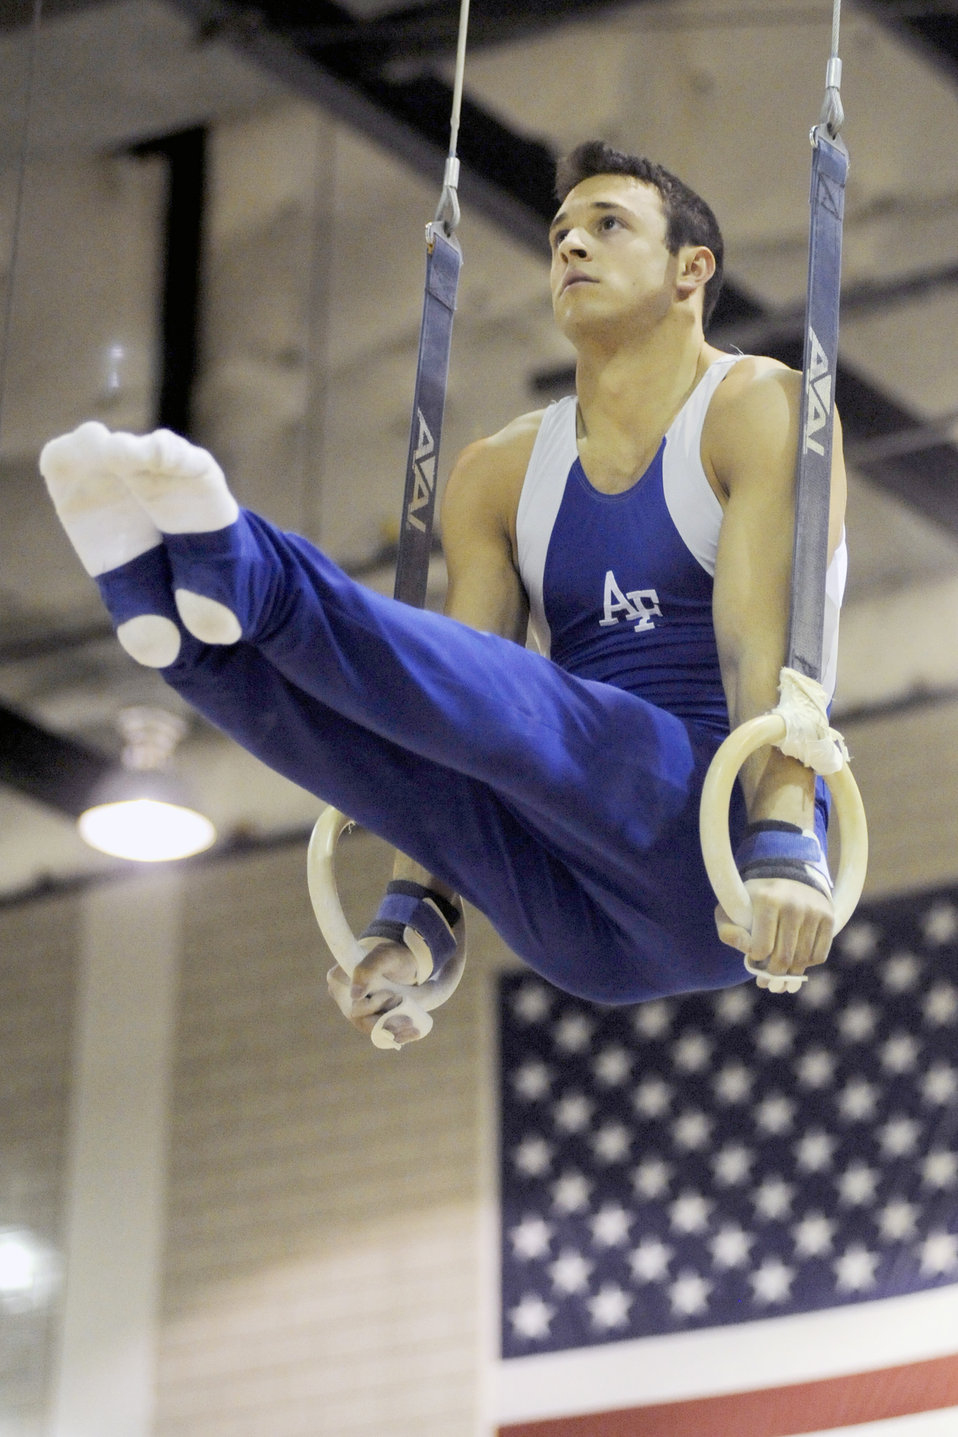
Falcon gymnasts lose in home final

Falcon junior Dan Klimkowski competes on the still rings during the Falcons home finale against Illinois-Chicago at the U. S. Air Force Academy's cadet gymnasium in Colorado March 7, 2010, placing third with a score of 14.95. The Falcons set a new team record, beating their previously set record of 342.55 which was set last year in Arizona, but fell to Illinois-Chicago 348.60 - 346.45.